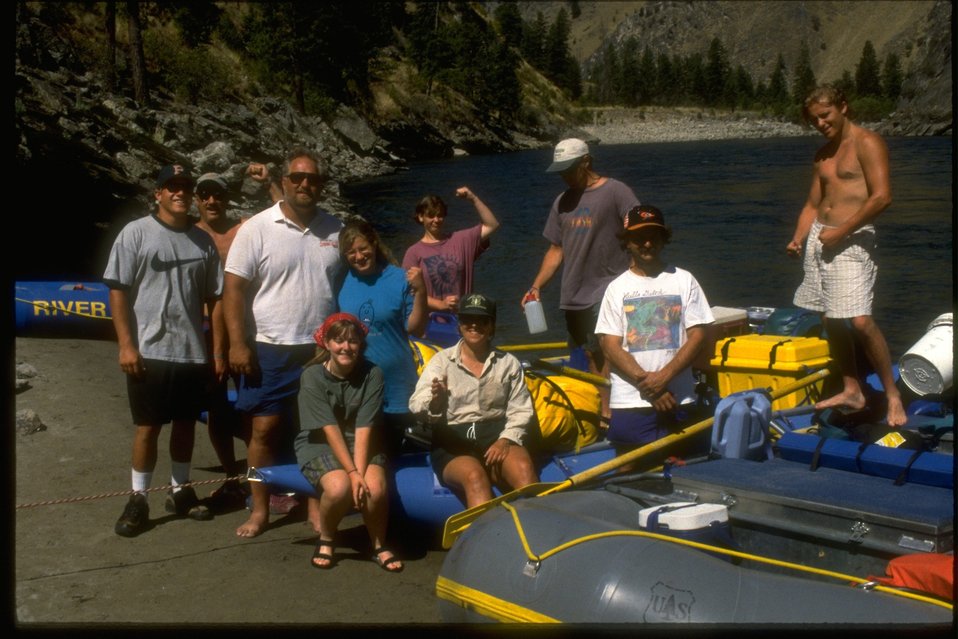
Boise High School students pulling knapweed along the Salmon River, Idaho.